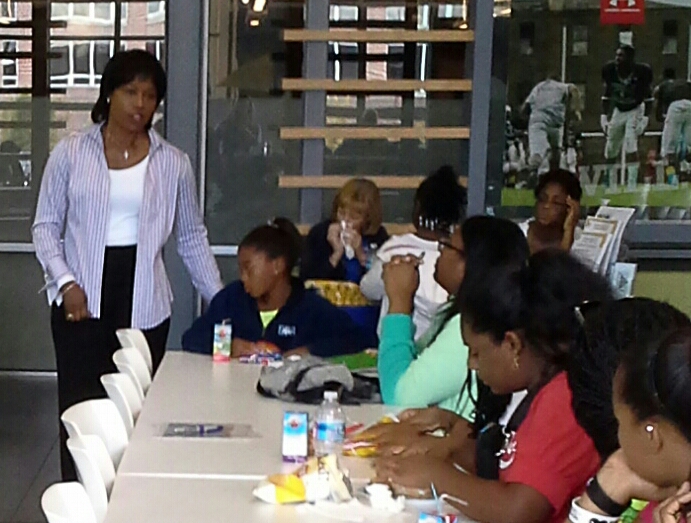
Sept 14 2013 Girls in STEM Summit

Director Dot Harris speaks to middle and high school girls in Baltimore at the Girls in STEM Summit this Sept.